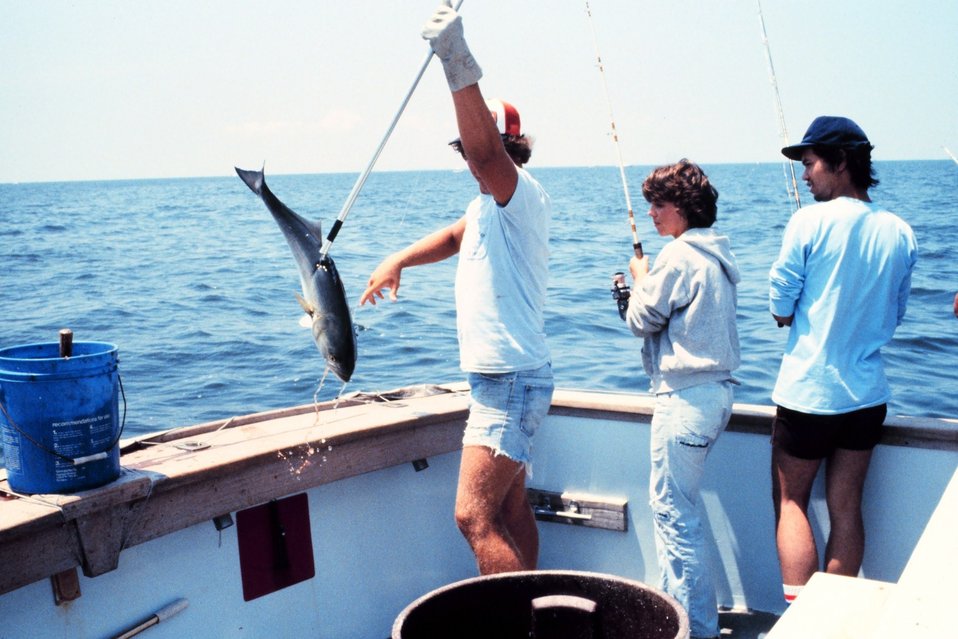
Fishing for blues in the bay - NOAA/NODC employees Melanie Hamilton and Chapman Hom watch as yet another Bluefish comes aboard.